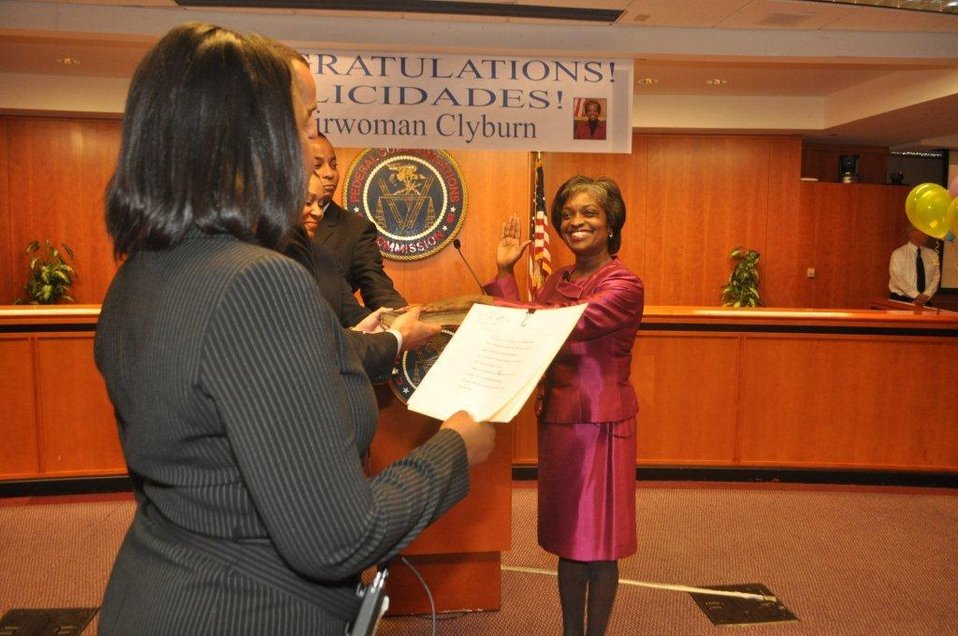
Witness the historic moment, as FCC Secretary Marlene Dortch swears in Mignon Clyburn, as 1st Acting Chairwoman of FCC